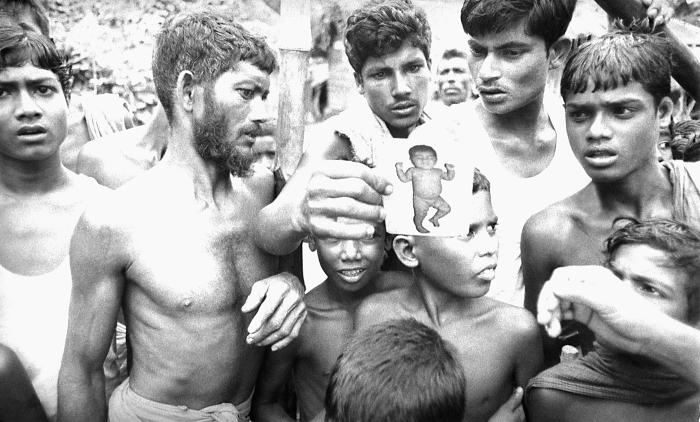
This 1975 photograph captured these Bangladesh village residents as they were examining the standard smallpox-case photograph. On one side was an anterior view of the entire figure of a small child displaying the characteristic maculopapular rash, and on the other side, i.e., the side the group was viewing, was an enlargement of the face, with a close-up view of the pustular rash. This photographic depiction, along with a series of questions, were used as tools in the smallpox eradication teams arsenal in their efforts to bring to a halt, a disease that had plagued mankind for over 2000 years.